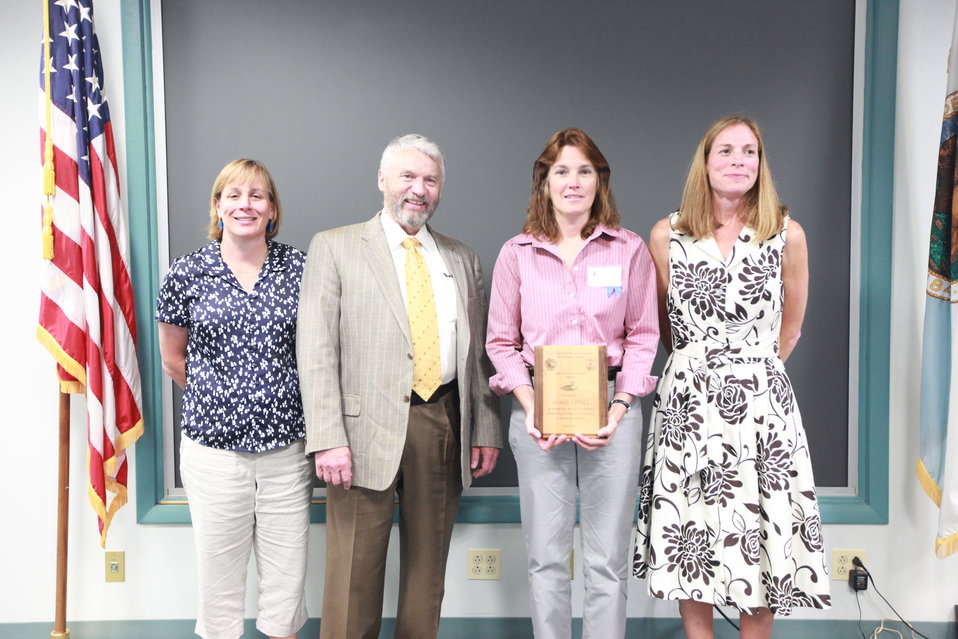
Northeast Region Employee Appreciation Awards

Northeast Deputy Regional Director Deb Rocque, Deputy Director Rowan Gould, Linda Welch and Northeast Regional Director Wendi Weber